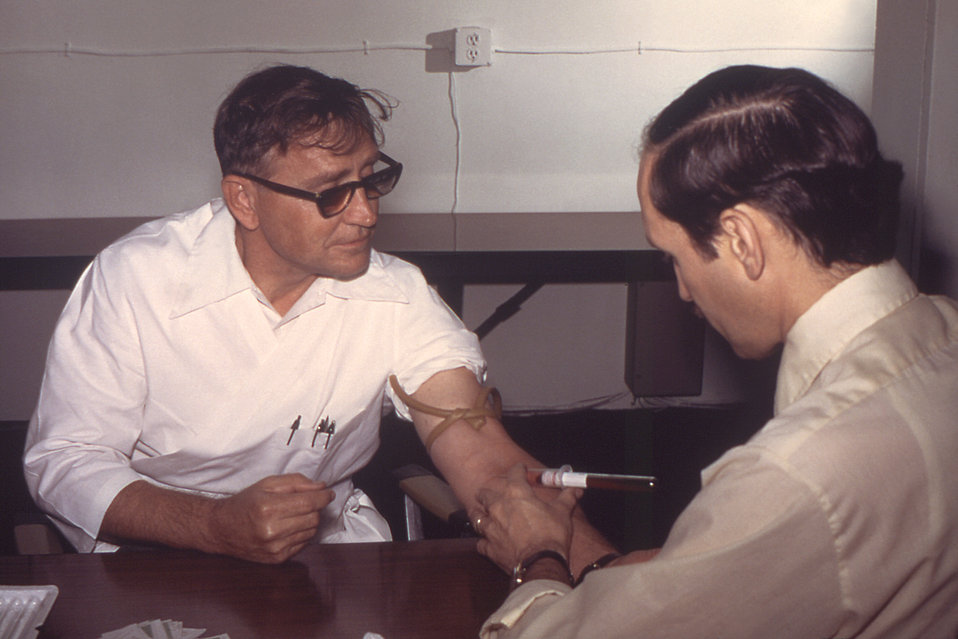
From 1976, this photograph depicted Dr. Gary Noble as he was in the process of drawing blood from a male patient that would be tested for its concentration of influenza antibodies. This image was captured during the National A/New Jersey/76 Influenza Study Program.